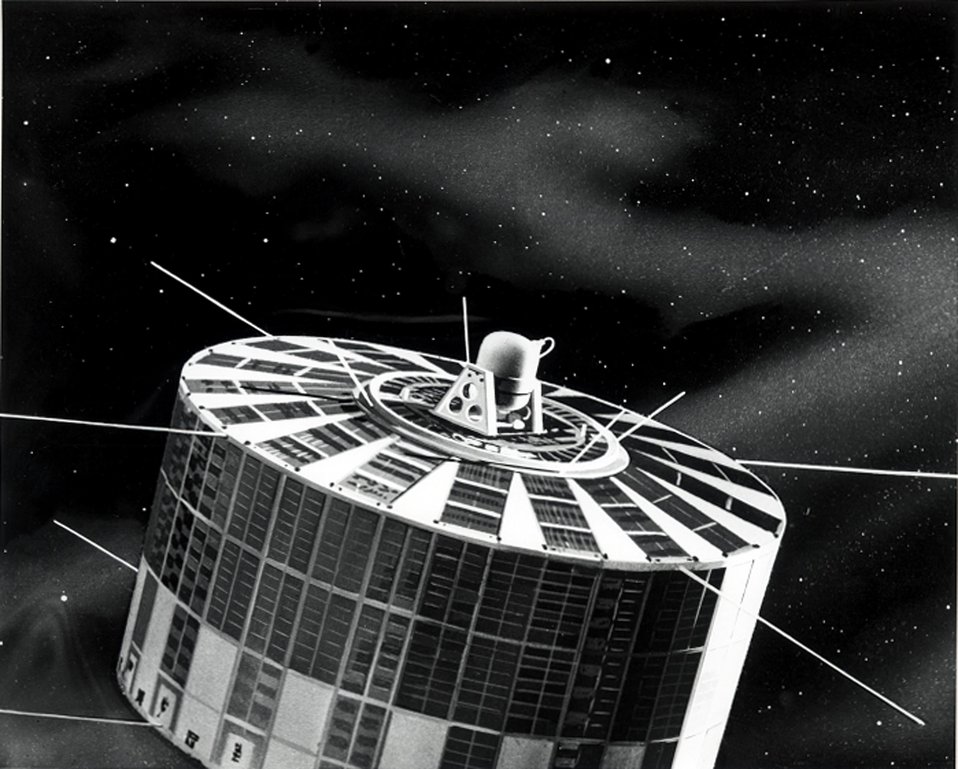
Artist's conception of the US Navy's Transit navigational satellite.